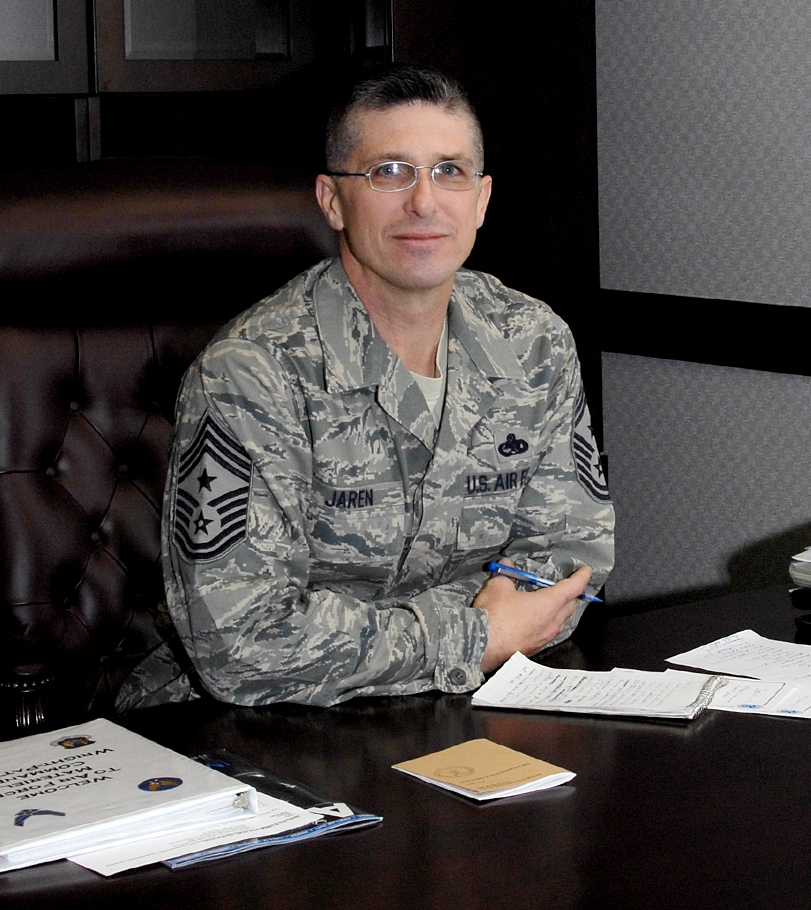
AFMC Command Chief

Chief Master Sgt. Eric R. Jaren has learned that a successful career requires not only fulfilling your duties, but thinking outside the box as well. Chief Jaren was recently named Air Force Materiel Command's new command chief.